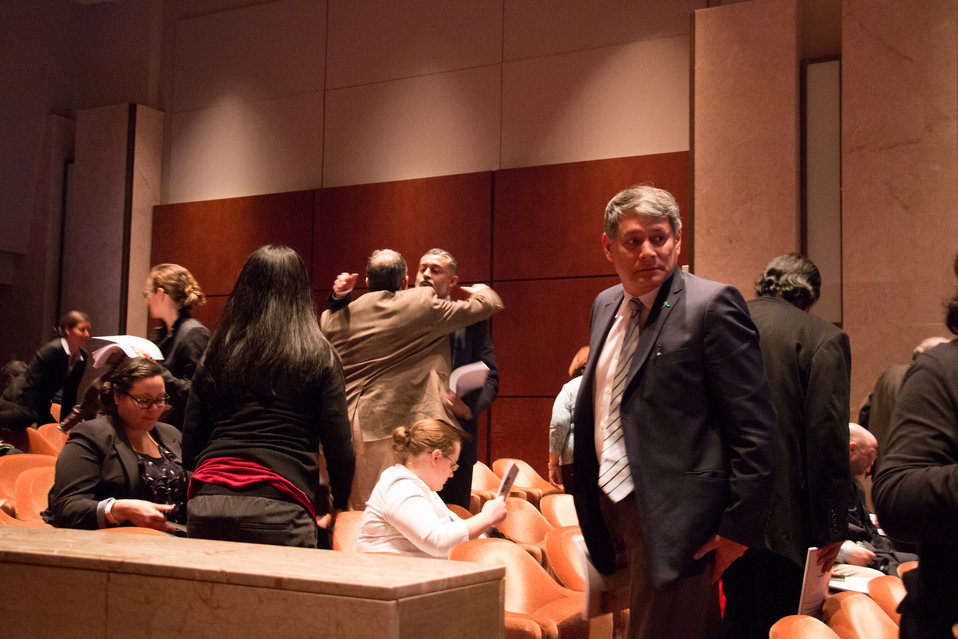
VHAP Launch (316 of 511)